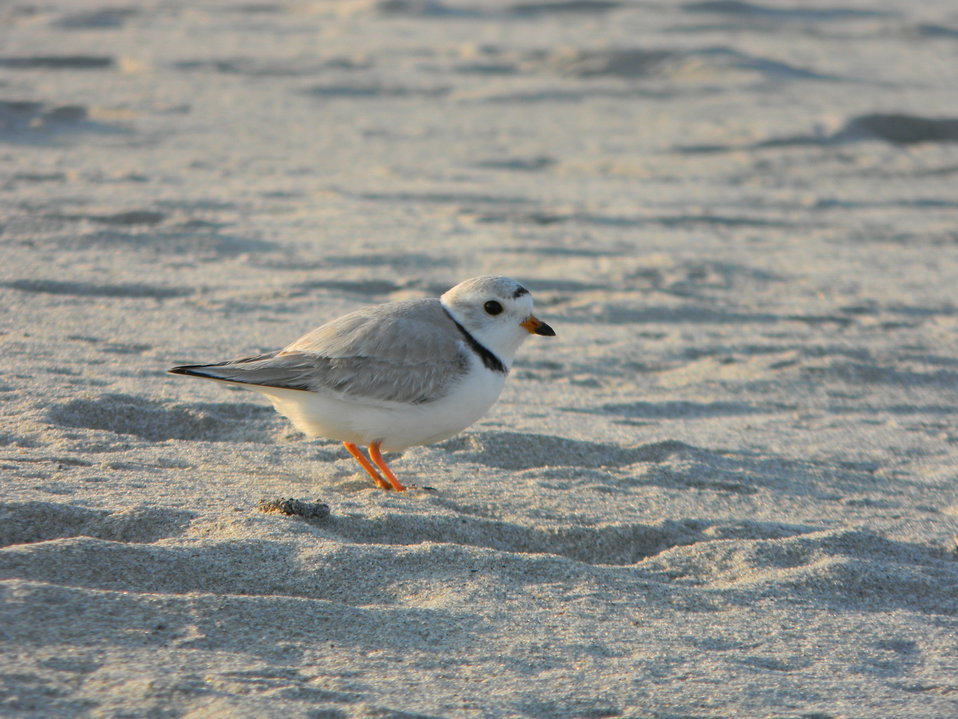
Piping plover

Photographed at Rachel Carson National Wildlife Refuge

Credit: Bri Rudinsky/USFWS

www.fws.gov/refuge/rachel carson/